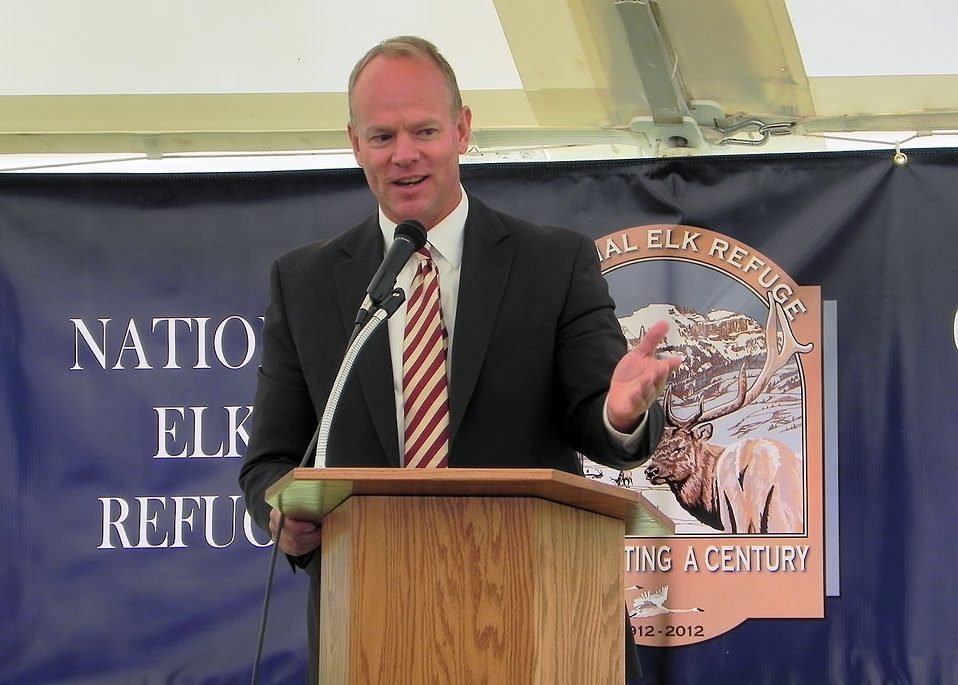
Wyoming Governor Matt Mead Joined the Line-Up of Speakers

Wyoming Governor Matt Mead addressed the audience at the National Elk Refuge's centennial ceremony on August 10. Mead grew up in Jackson and reminisced about how he spent time on the National Elk Refuge as a youth.

Credit: USFWS / BJ Baker, National Elk Refuge volunteer